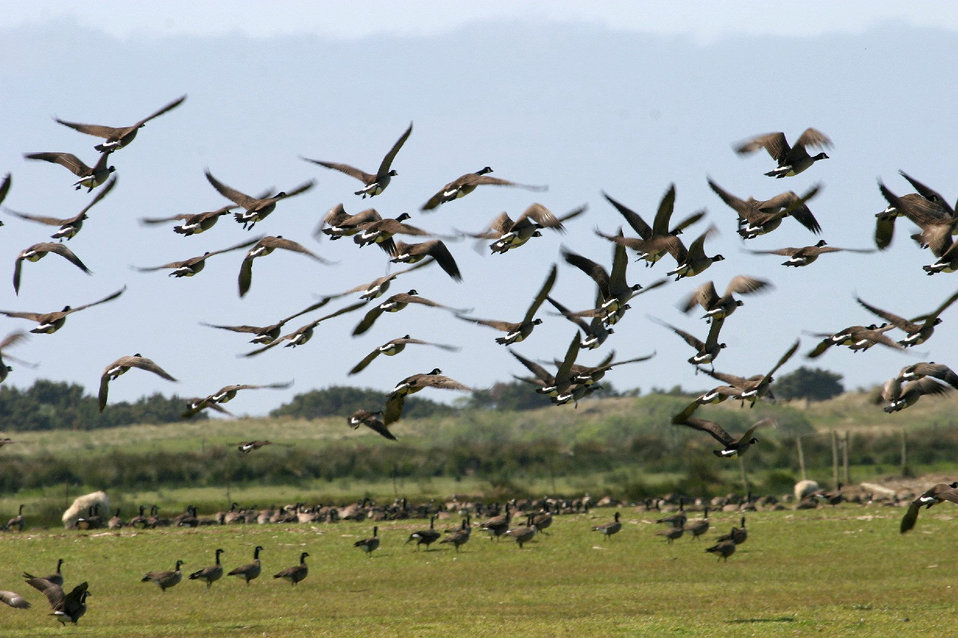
migrating geese near Oregon coast

November 2011